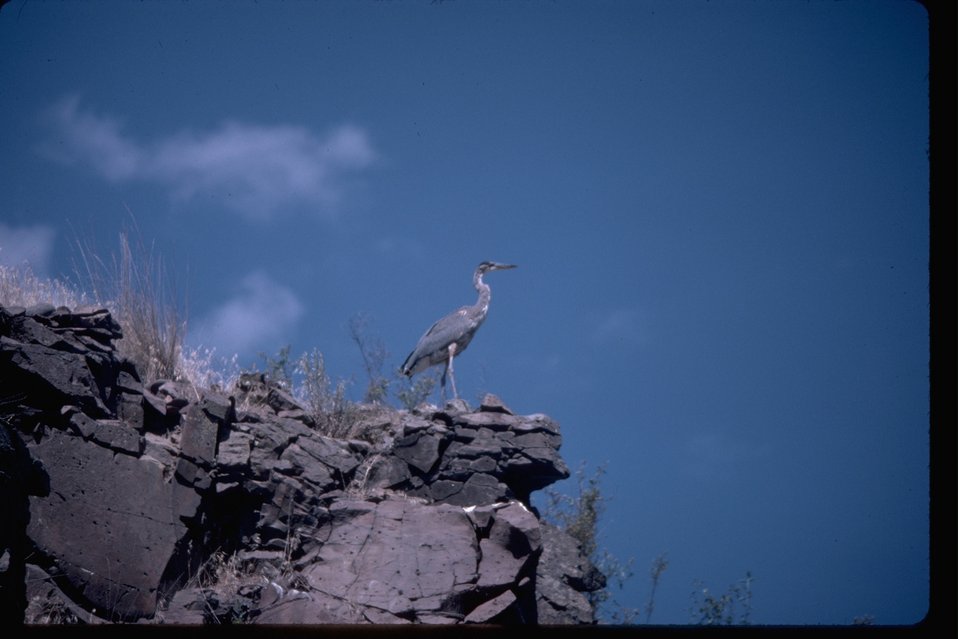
Blue Heron standing on a rocky ledge in the Deschutes River area.